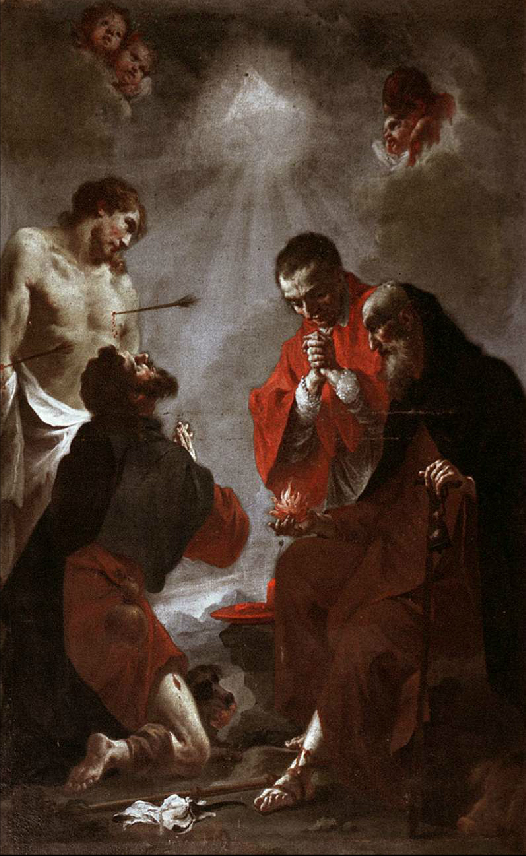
'Quattro Santi' di Francesco Capella